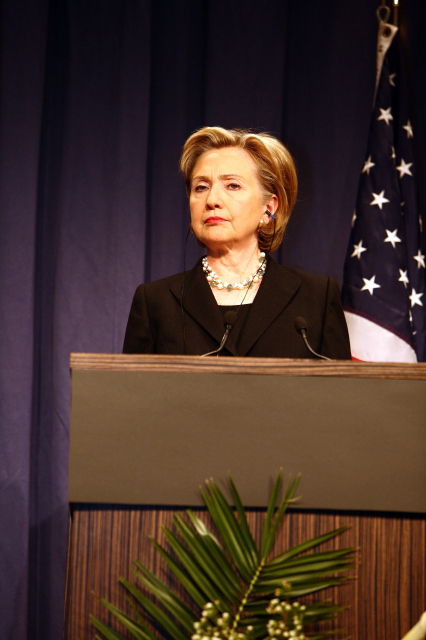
Press Conference With Russian Foreign Minister

Press conference after dinner meeting between U.S. Secretary of State Hillary Rodham Clinton and Russian Foreign Minister Sergey Lavrov in Geneva, Switzerland March 6, 2009.